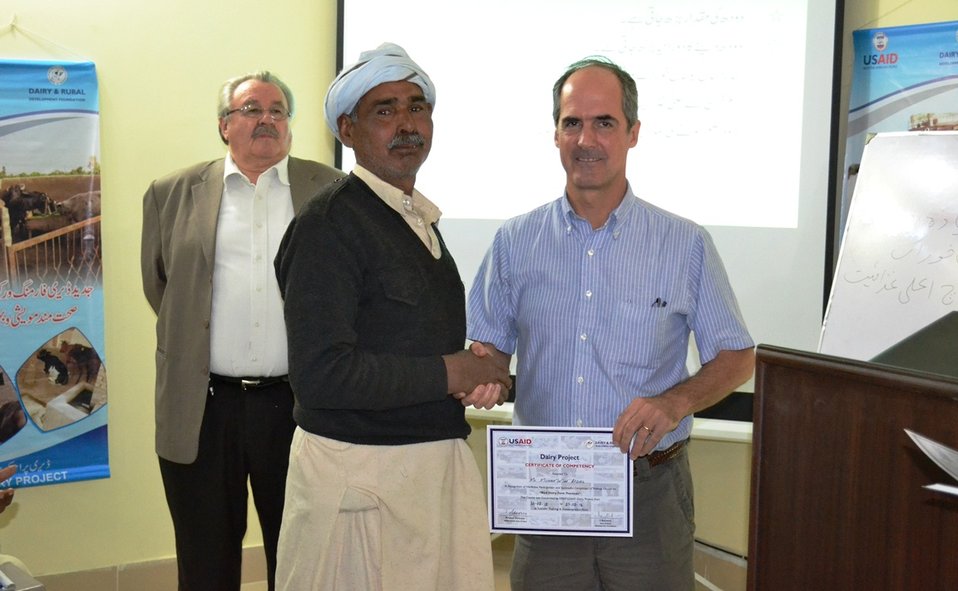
Ted Gehr, Director USAID Punjab, distributing training completion certificates to the dairy farmers enrolled under USAID-DRDF Dairy Project's Training Program.